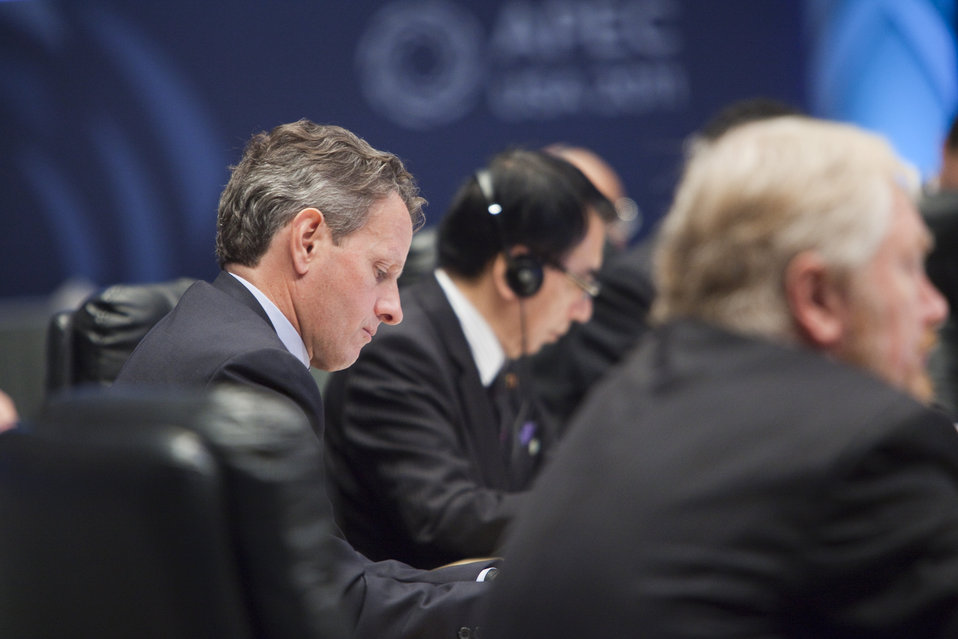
APEC Meeting of Finance Ministers

In Honolulu, HI, Treasury Secretary Tim Geithner participates in a working session with other finance ministers from Pacific Rim economies during the 2011 Asia-Pacific Economic Cooperation (APEC) Meeting of Finance Ministers.